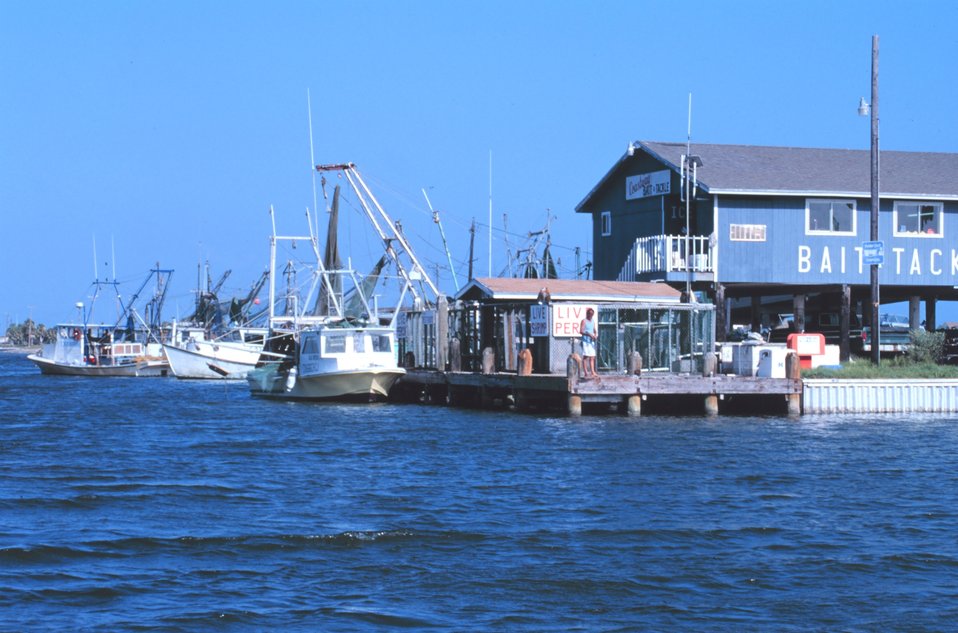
Shrimp boats tied up just south of the JFK Causeway